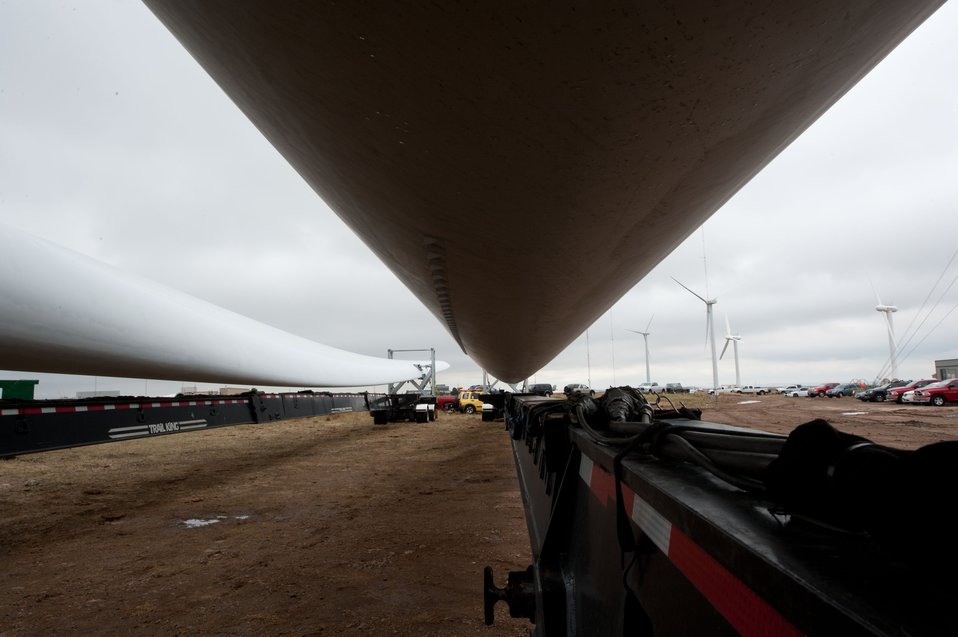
National Wind Technology Center - Colorado

The first of 4 towers is lifted as work continues on the 2 MW Gamesa wind turbine being installed at NREL's National Wind Technology Center (NWTC).